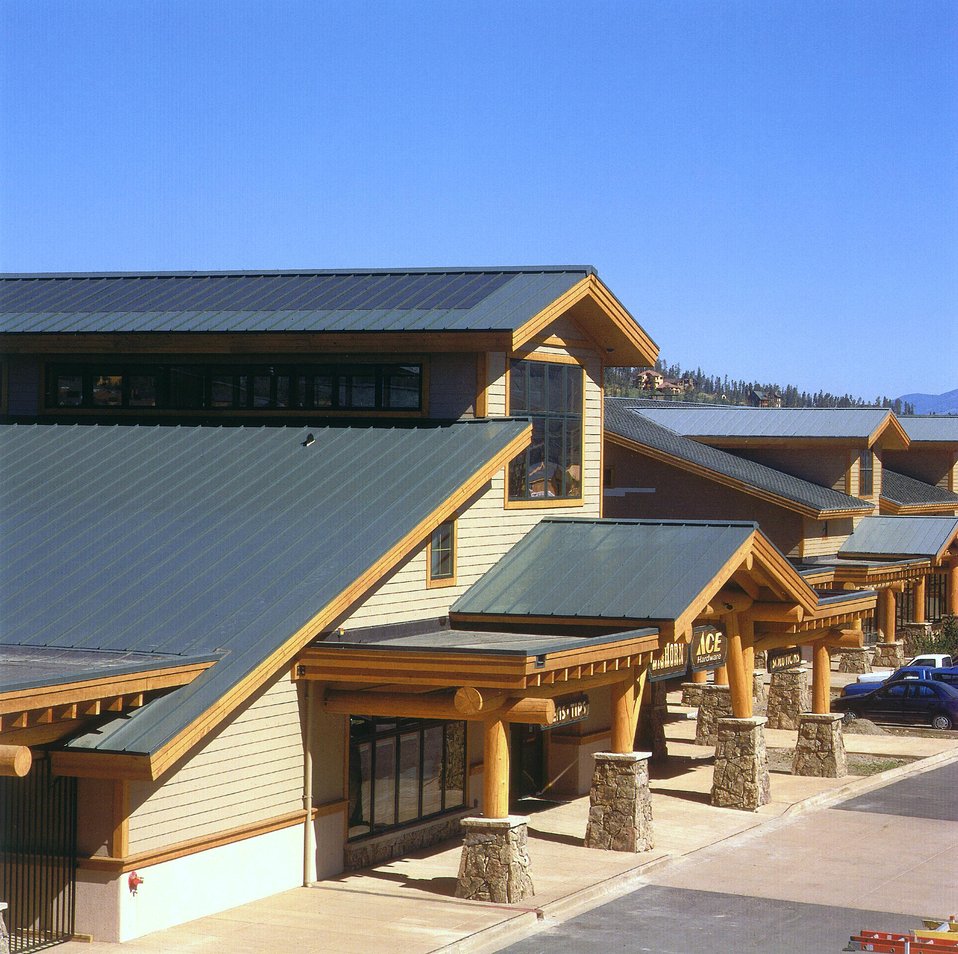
A RETAIL COMPLEX IN SILVERTHORNE, COLORADO.

THE BIGHORN HOME IMPROVEMENT CENTER IN SILVERTHORNE, COLORADO, A HIGH PERFORMANCE COMMERCIAL BUILDING, FEATURES A ROOF INTEGRATED PHOTOVOLTAICS, NATURAL VENTILATION COOLING, DAYLIGHTING, DIFFUSING SKYLIGHTS, AND A SOLAR WALL.